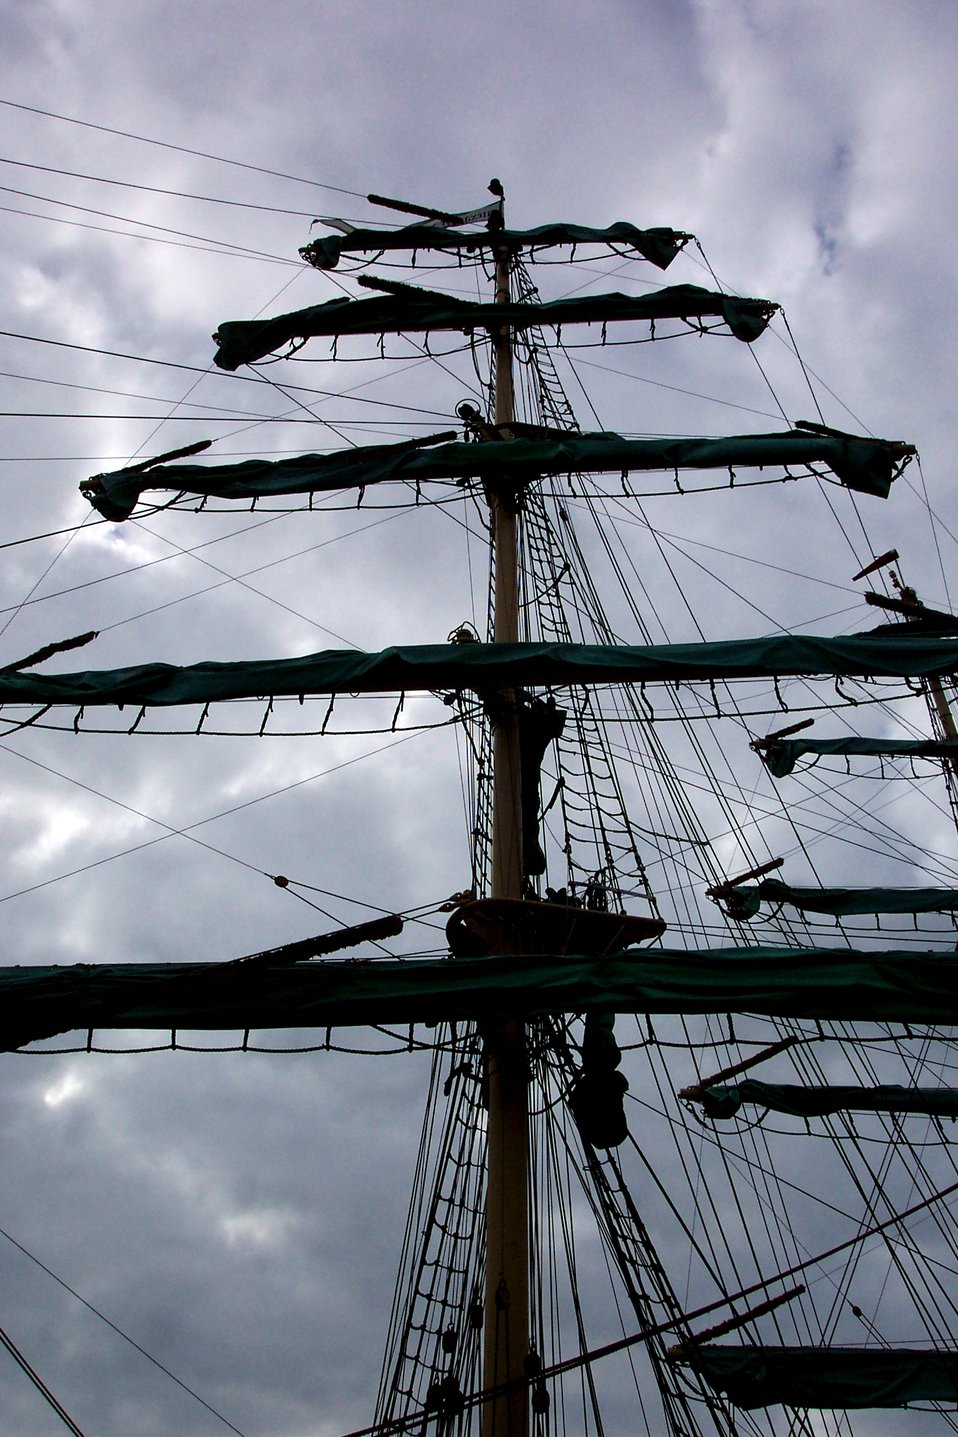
A mast of the sailing ship ALEXANDER VON HUMBOLDT.